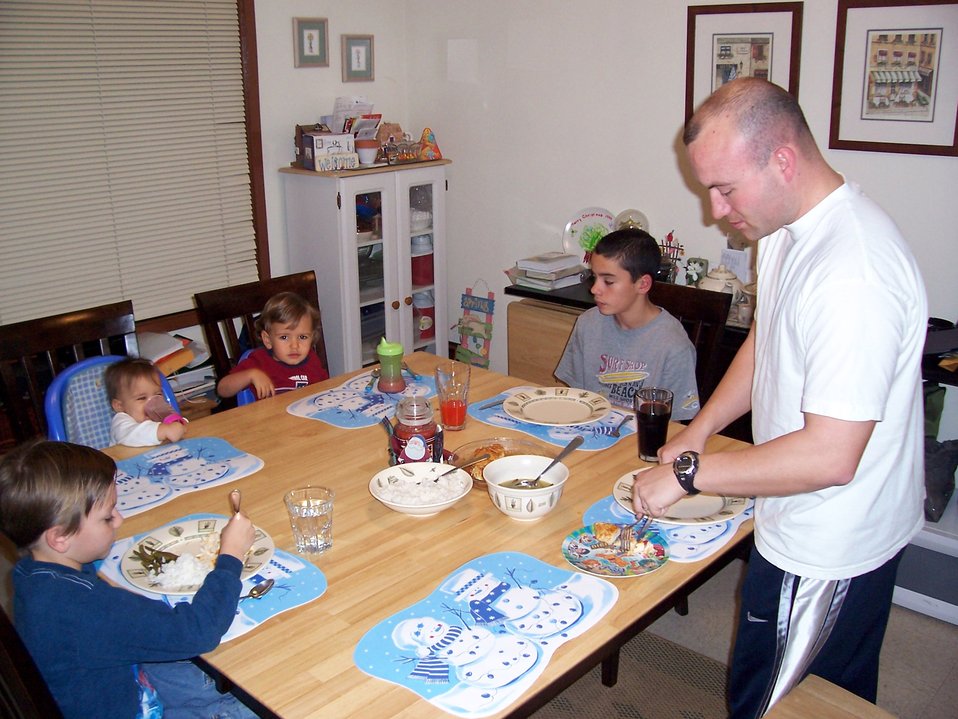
Serving: Tech. Sgt. Booth

Tech. Sgt. Tracey Booth prepares dinner for his four children who range in age from 9 months to 12 years old.
Sergeant Booth is serving this holiday season as both mom and dad while his wife, Tech. Sgt. Kelli Wright, is deployed to Kirkuk, Iraq.